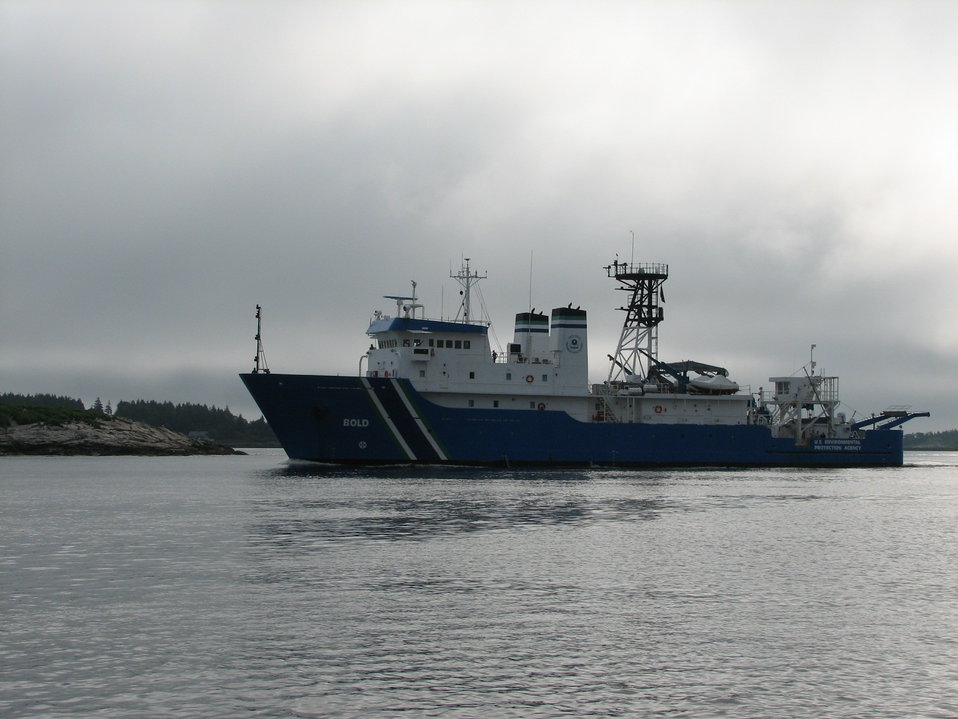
August 2009, Early risers at Popham catch a glimpse of the Bold in the lifting fog

View from Fort Popham Beach, Phippsburg, Maine.